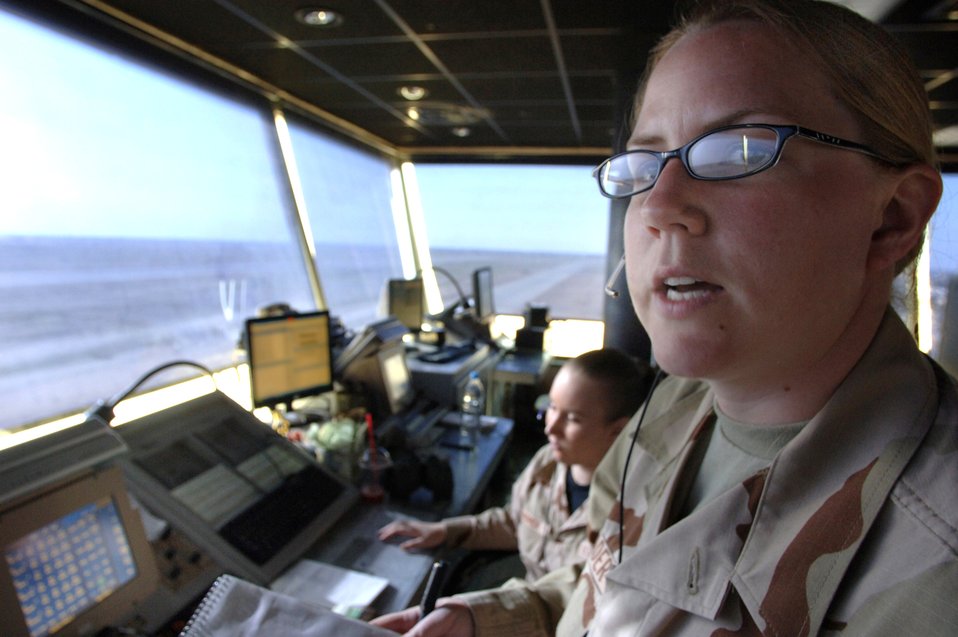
Operation Iraqi Freedom

BALAD AIR BASE, Iraq - Senior Airmen Sara Mader and Kristen Bundrick, 332nd Expeditionary Operational Support Squadron, Air Traffic Controllers comunicate with aircraft to ensure safe landings and takeoffs from the Balad tower Mar. 10, 2007.